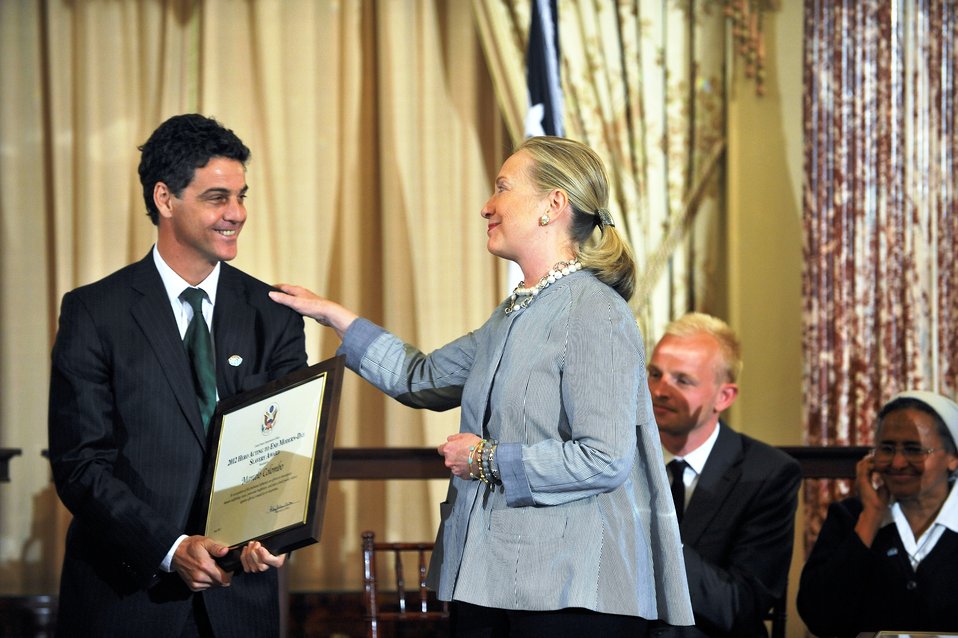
Secretary Clinton With TIP Hero Marcelo Colombo

U.S. Secretary of State Hillary Rodham Clinton honors Marcelo Colombo of Argentina, a 2012 Trafficking in Persons (TIP) Report Hero, at the U.S. Department of State in Washington, D.C., on June 19, 2012.